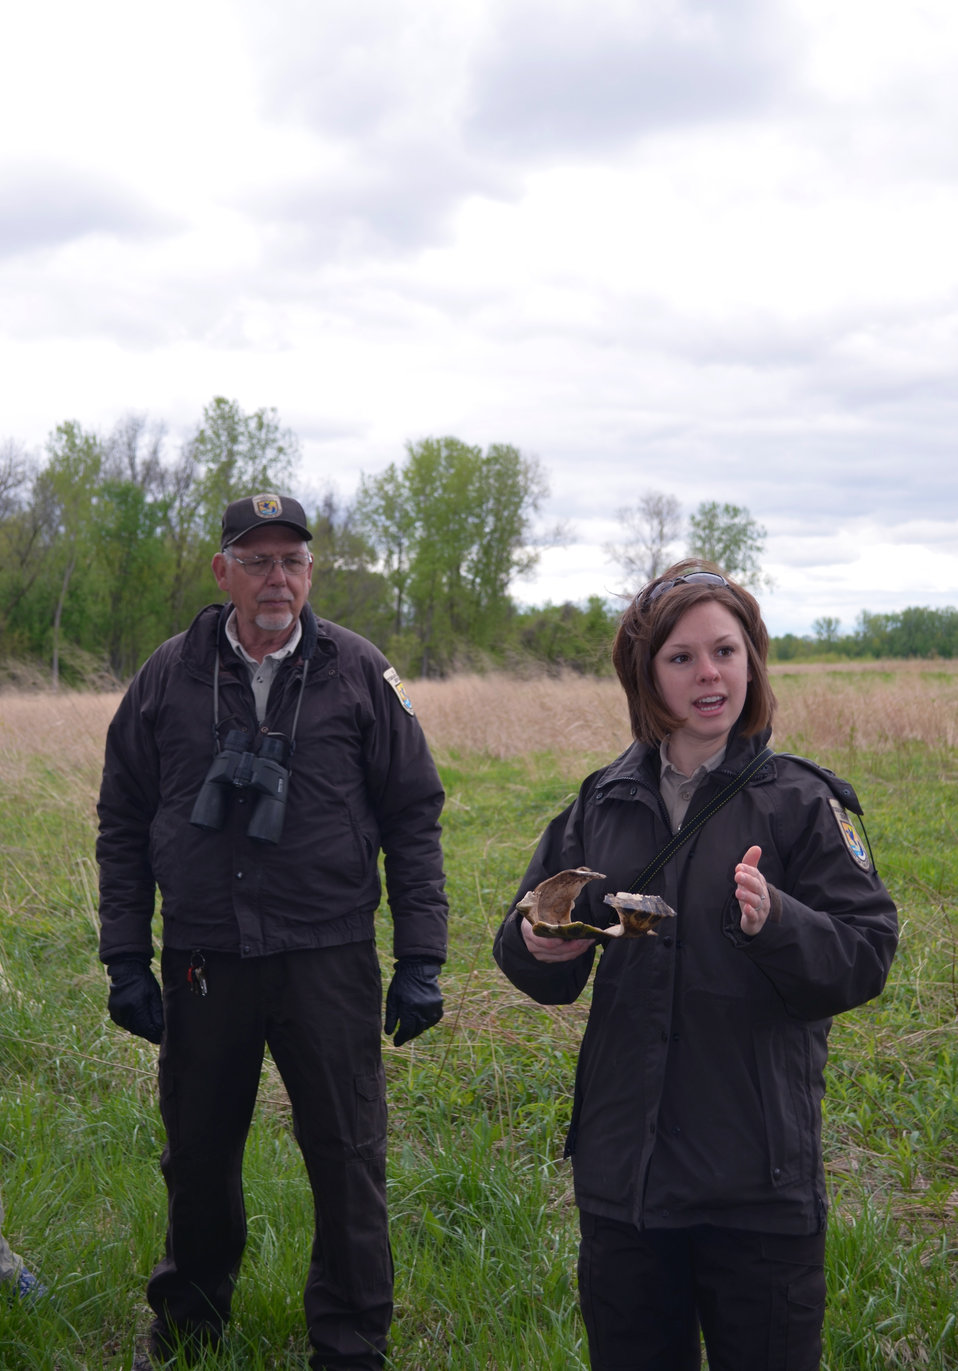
Environmental Interpretation

Two Rivers National Wildlife River BiologistKen Dalrymple and Visitor Services Manager Courtney Solum share information about the red-eared slider, common to the Two Rivers National Wildlife Refuge, in Illinois.